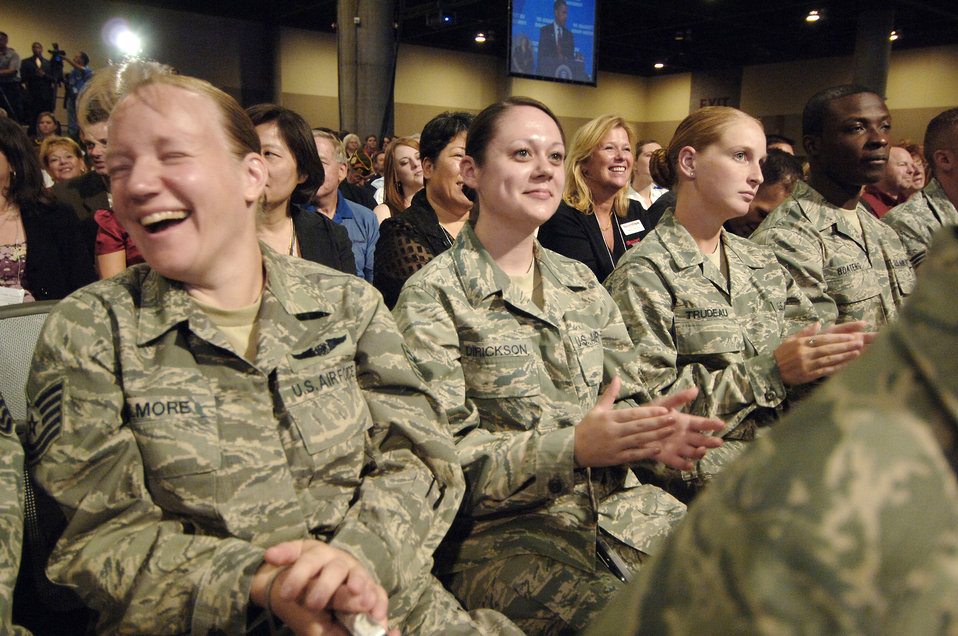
President meets Luke Airmen

Airmen from Luke Air Force Base, Ariz., share a laugh while listening to President Barack Obama at the 110th Veterans of Foreign Wars National Convention at the Phoenix Convention Center Aug. 17.